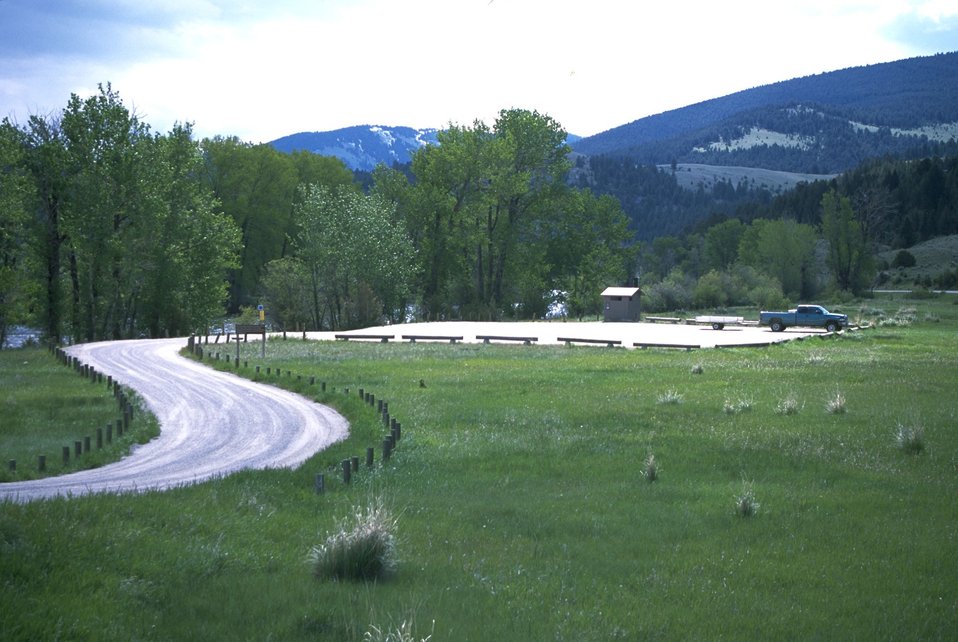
The parking lot of the Jerry Creek Day Use Area